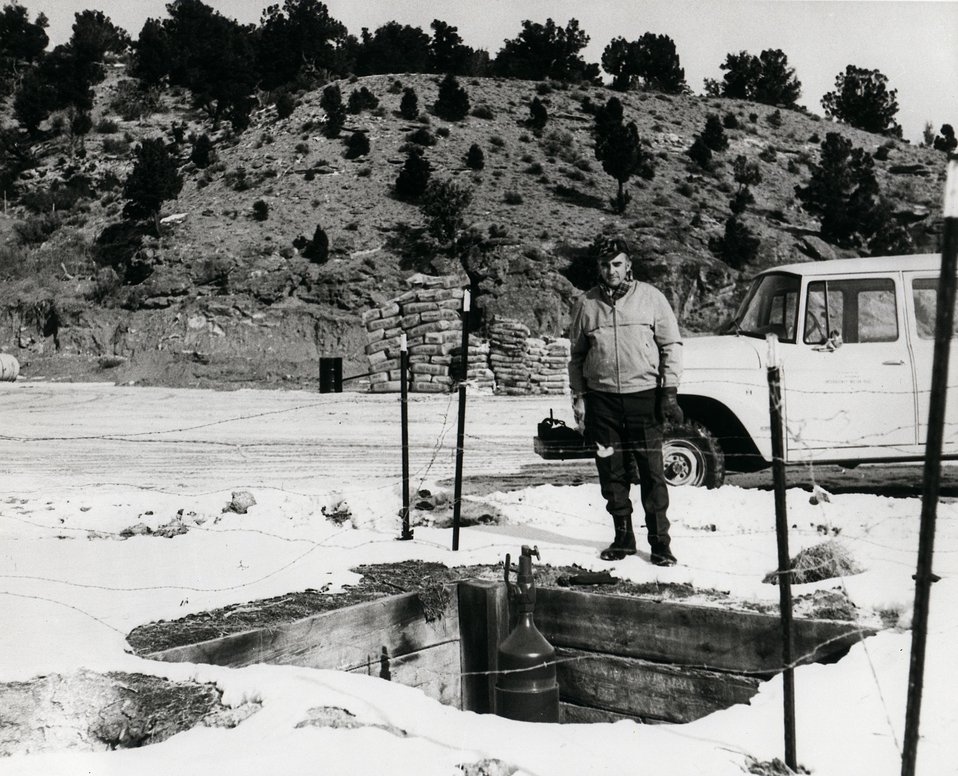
Rio Blanco emplacement well in the Piceance Creek Basin of northwestern colorado, 50 miles north of Grand Junction. Drilling has been completed for a 1973 joint AEC-CER Geonuclear, Inc., peaceful underground nuclear gas simulation explosion. Circa 1973.